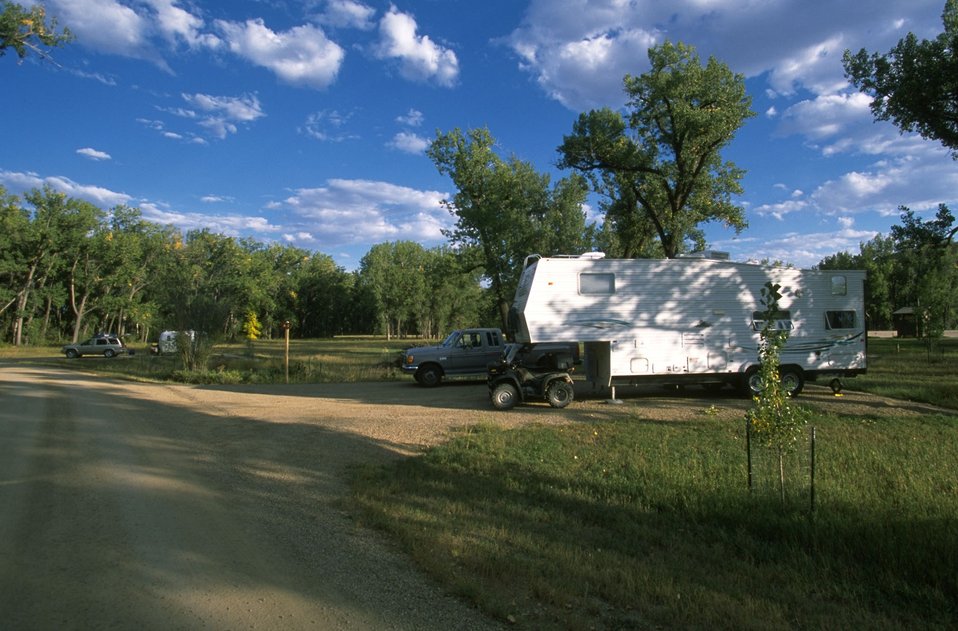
Kipp Recreation Area